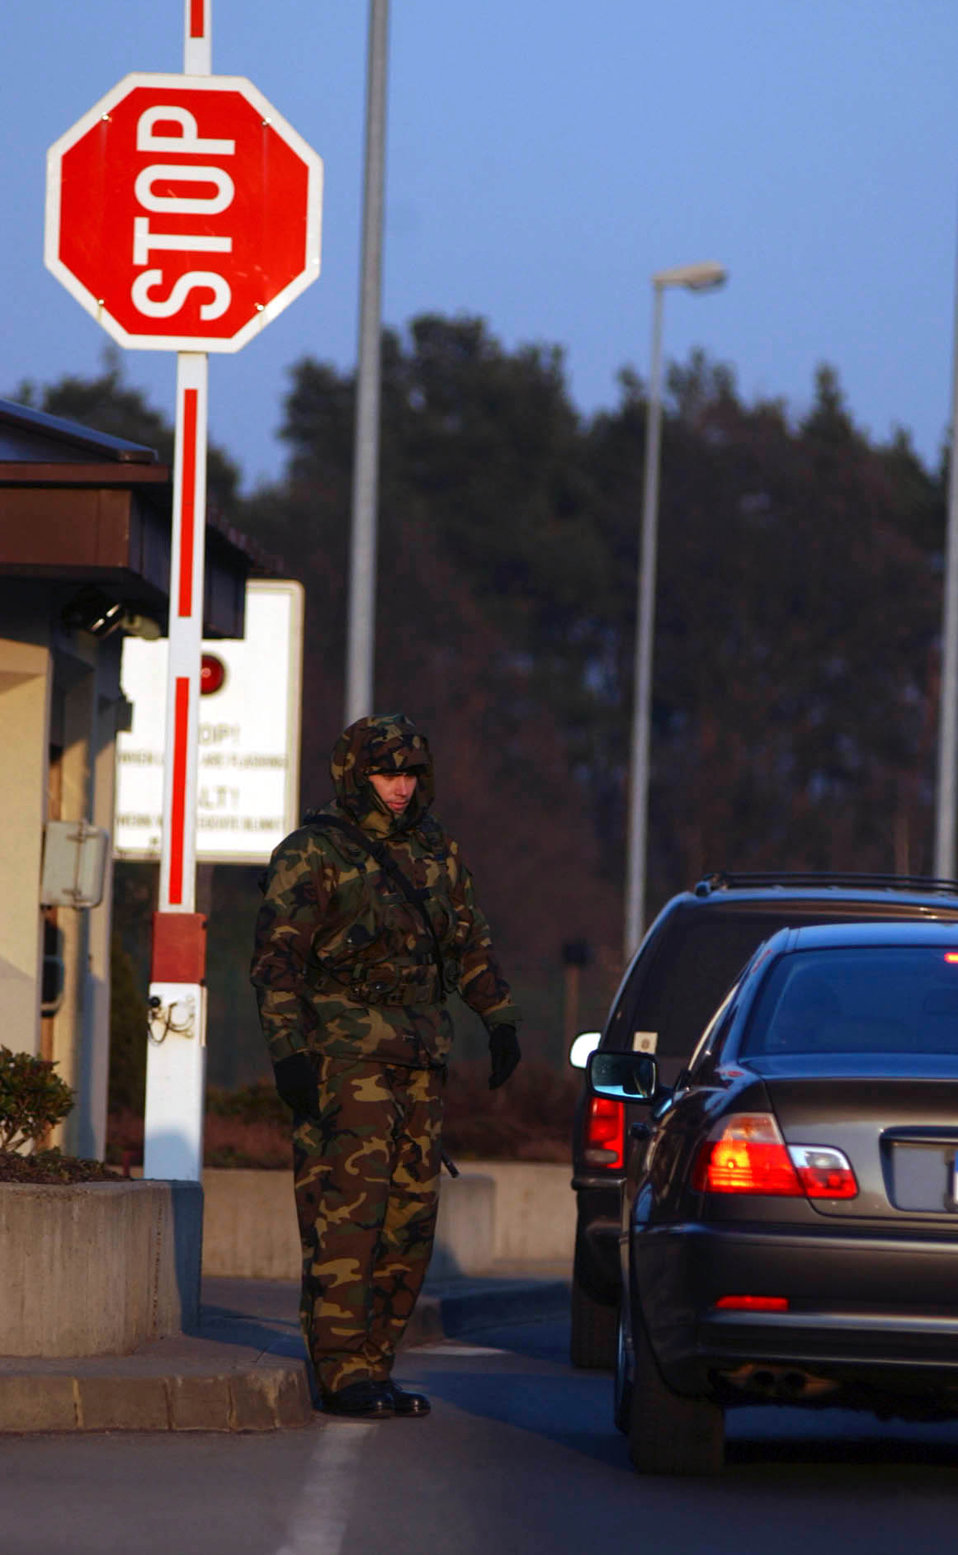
Air bases in Germany getting change of guard

RAMSTEIN AIR BASE, Germany -- Senior Airman Sean Donovan of the 723rd Air Mobility Support Squadron directs traffic at the east gate to Ramstein Air Base, Germany. Donovan augments security forces, which pulls him away for his own job. But when German troops arrive to help at the base gates later this month, he may not have to pull gate guard duty again.